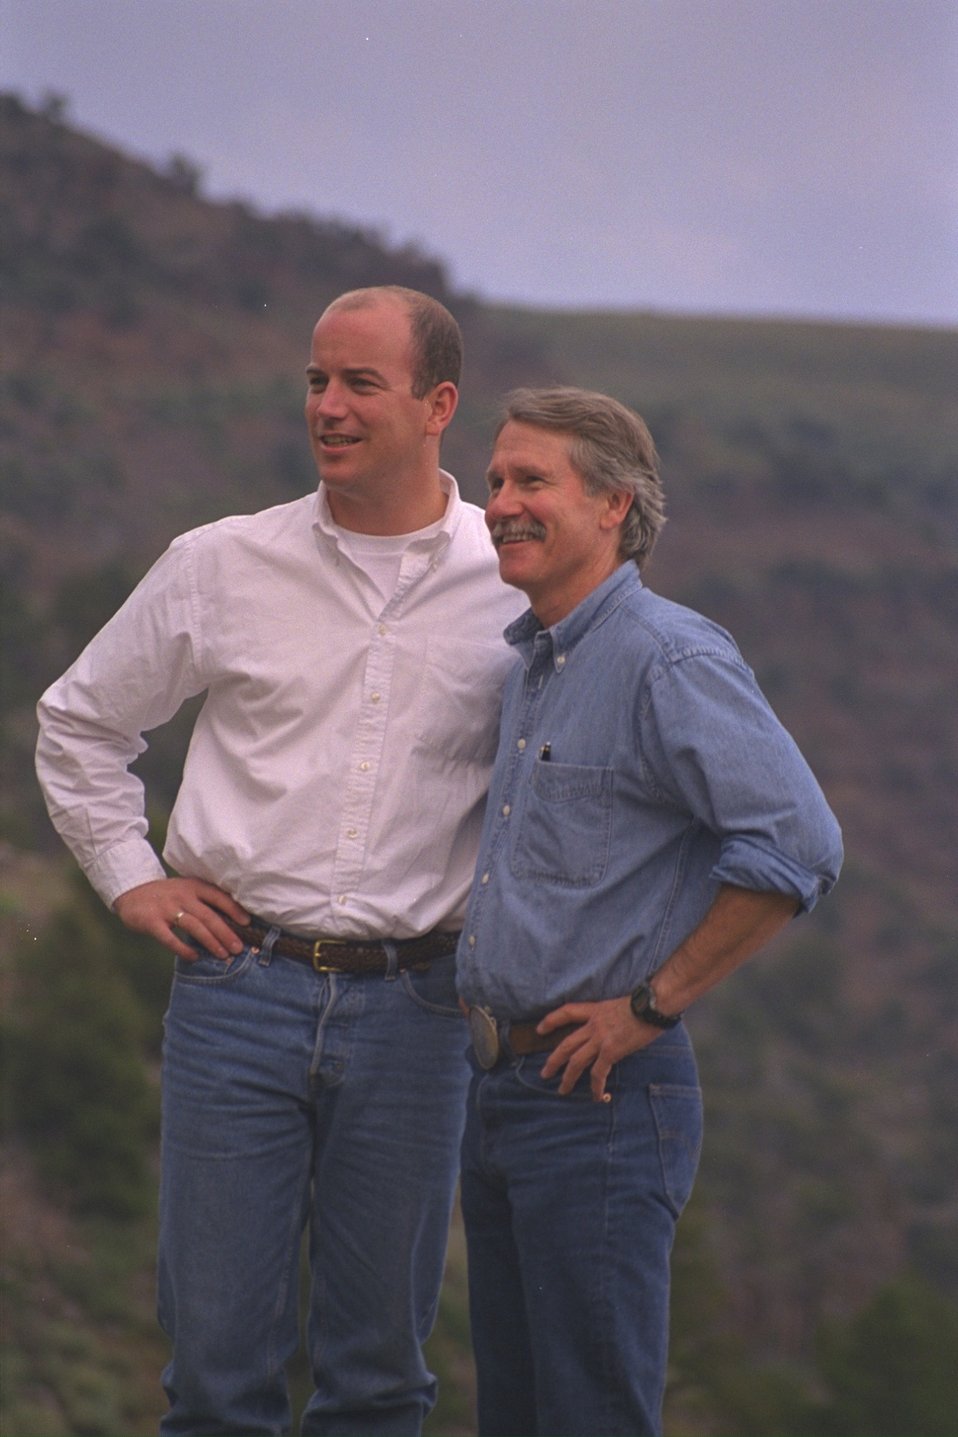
On left, Senator Wyden's aide, David Blair, and on the right, Governor Kitzhaber at Big Indian Gorge.